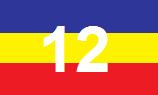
12 Service Battalion Flag